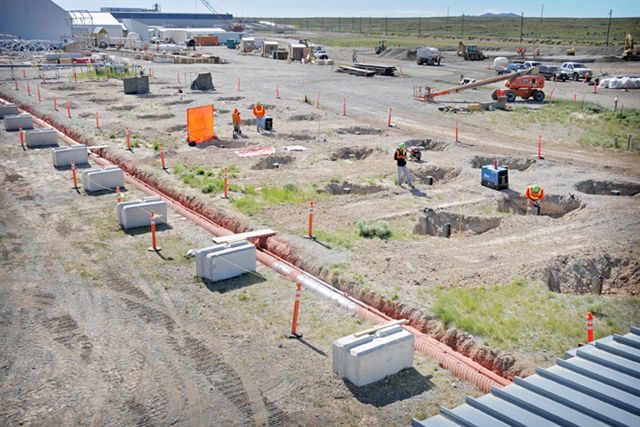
RAN ARP RWMC S127 ARPVII FINISHPILING 070610 P6558-013 A